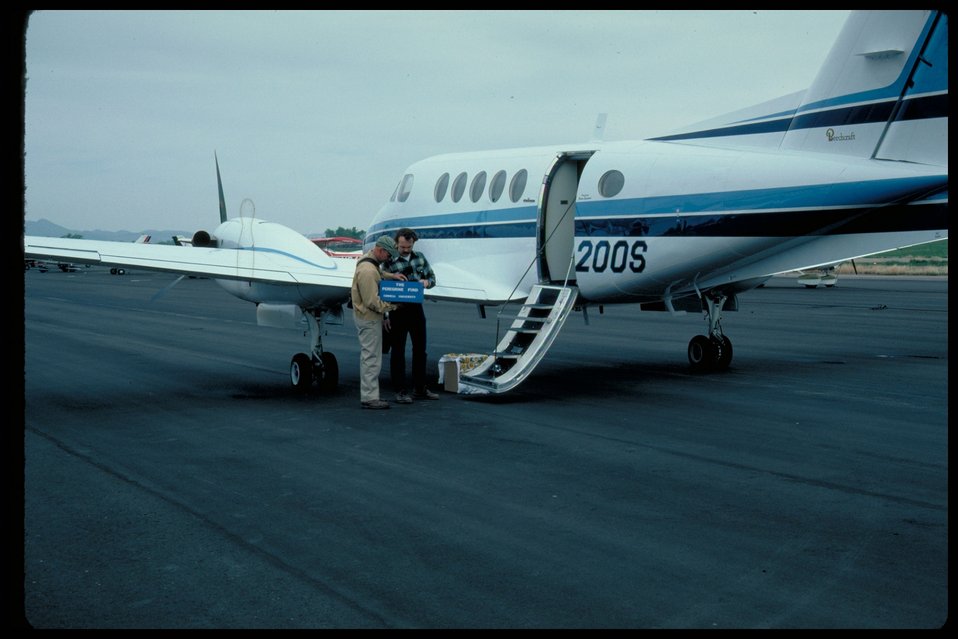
Birds of Prey National Conservation Area BOP Owyhee Field Office LSRD Lower Snake River District